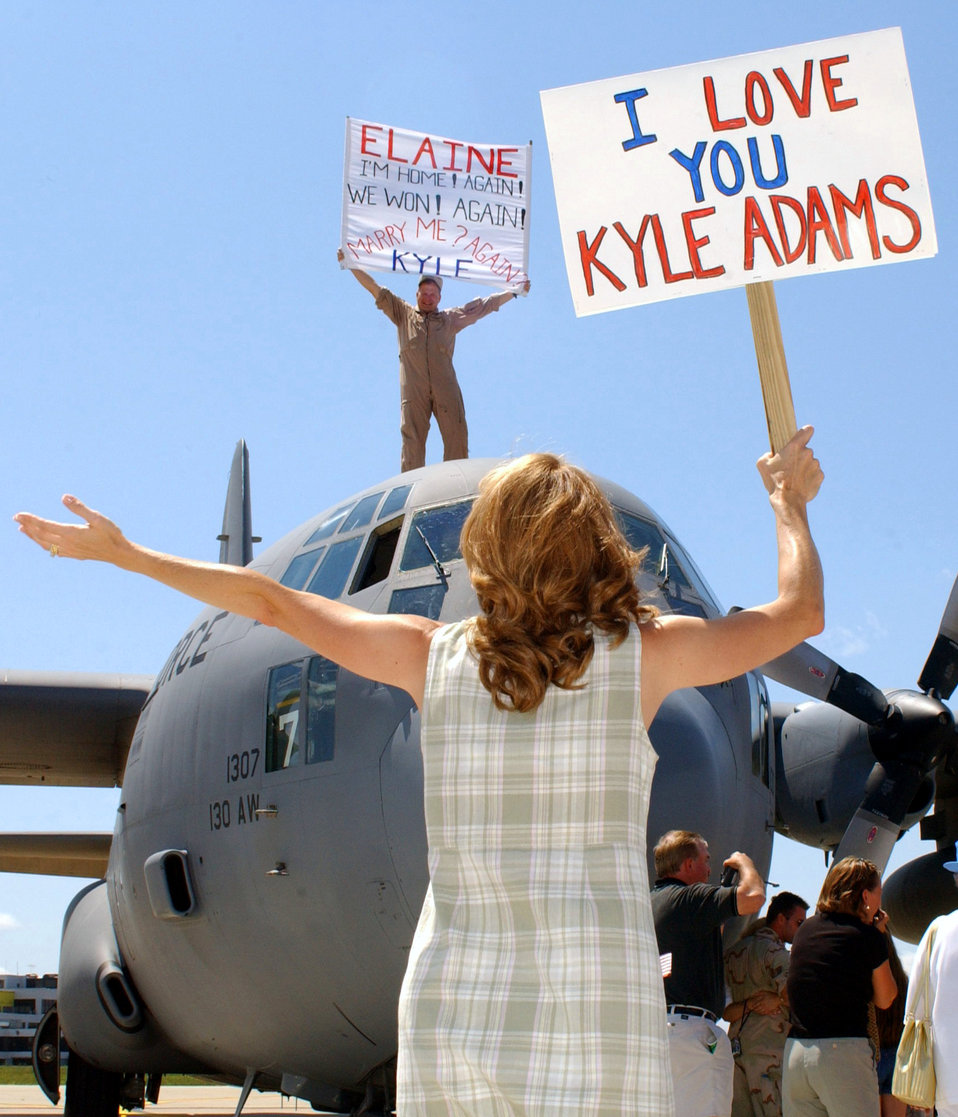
Marry me, again?

YEAGER AIRPORT, W.Va. -- Maj. Kyle Adams, 130th Airlift Wing, returnes to home on Aug. 4, after spending five months in Southwest Asia supporting Operation Iraqi Freedom. Adams and his wife display signs renewing their vows. The wing's returning airmen were welcomed home by family and friends.